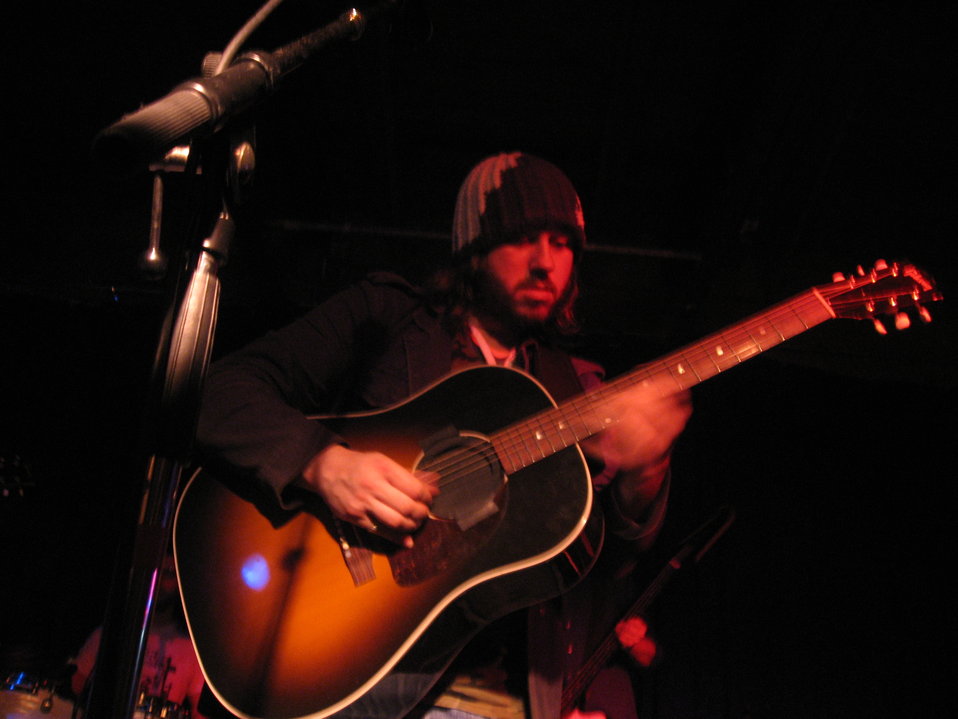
Badly Drawn Boy playing a show in the Urban Lounge, Salt Lake City, Utah. (March 2007).